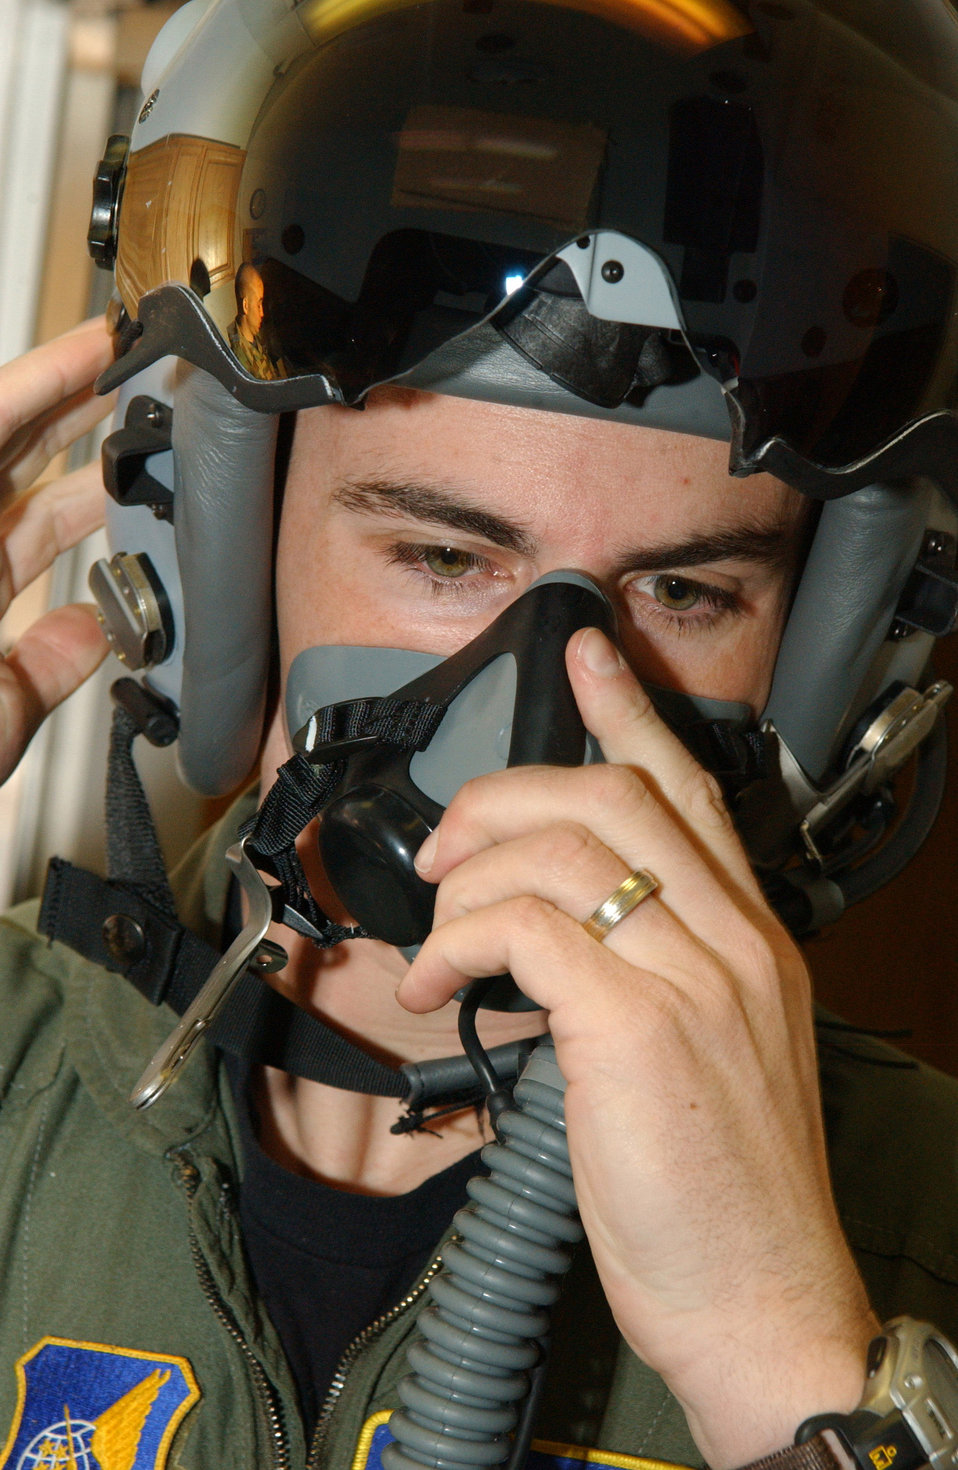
New helmet gives pilots the edge

Capt. Jeremey Wimer tries on a newly issued fighter helmet while gearing up Feb. 21 at the 18th Fighter Squadron at Eielson Air Force Base, Alaska. The new helmet mounted queing system has targeting technology that projects holographic data on the inside right of the visor in the form of a container, or que and allows pilots to continually survey and distinguish between friendly and enemy air and ground targets. Captain Wimer is an F-16 Fighting Falcon pilot.